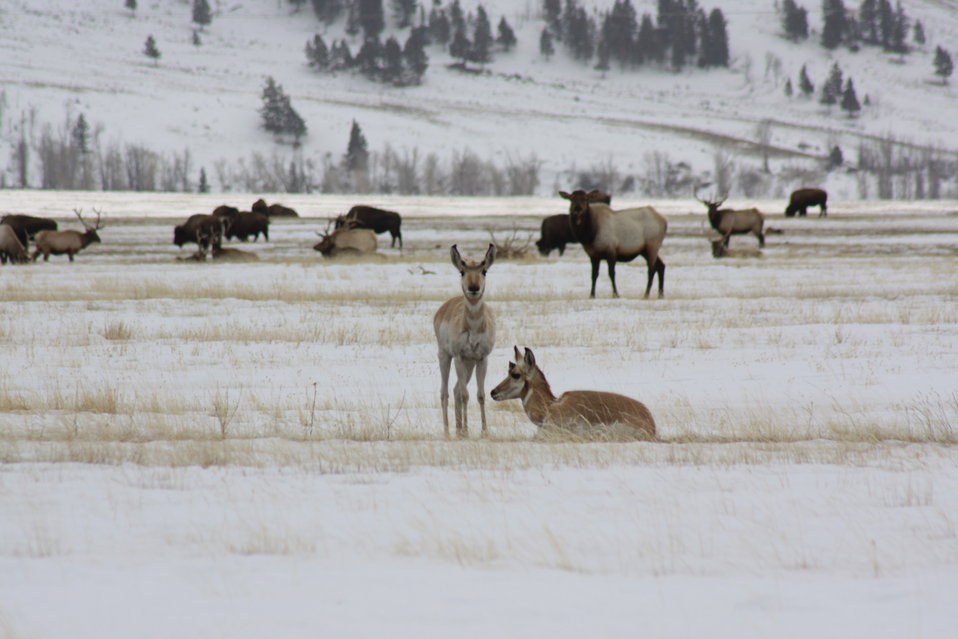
Challenging Winter Habitat

While pronghorns may fare well during summers on the National Elk Refuge, this is not suitable winter habitat for them. They are not a species well-adapted to typcial Jackson Hole winters. If pronghorns don't migrate out of the Jackson Hole valley prior to deep snowfall, their chances of survival greatly decrease.

Credit: USFWS / Ann Hough, National Elk Refuge volunteer